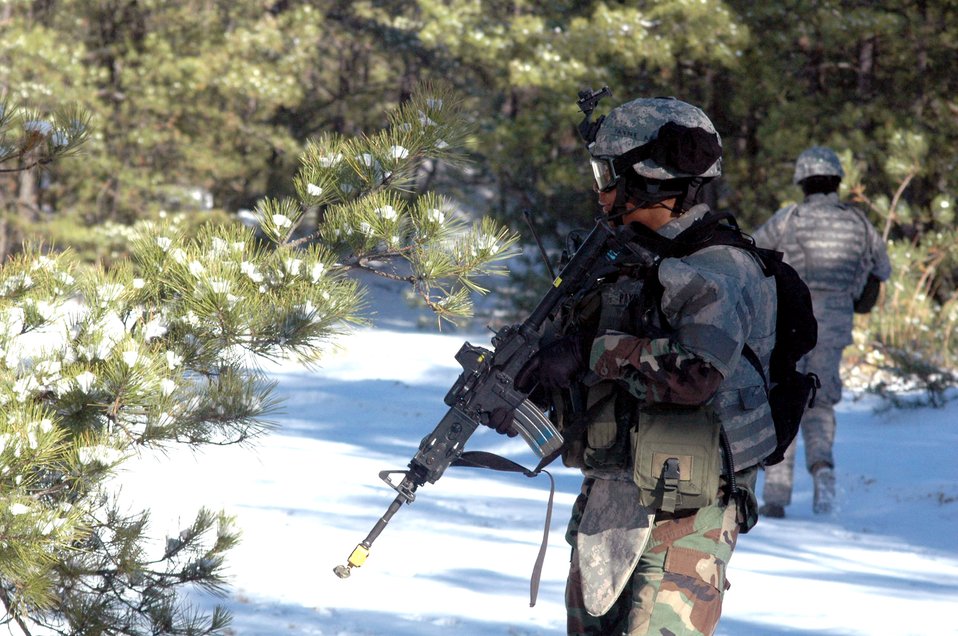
Air Force tactical security element training

Students in the tactical security element training course practice a dismounted patrol during training on a range on Fort Dix, N.J. The course, held in early December, was the first of its kind by the U.S. Air Force Expeditionary Center at Fort Dix. Taught by instructors from the Air Force Office of Special Investigations and a security forces cadre from the center's 421st Combat Training Squadron, the training is designed to prepare security forces for